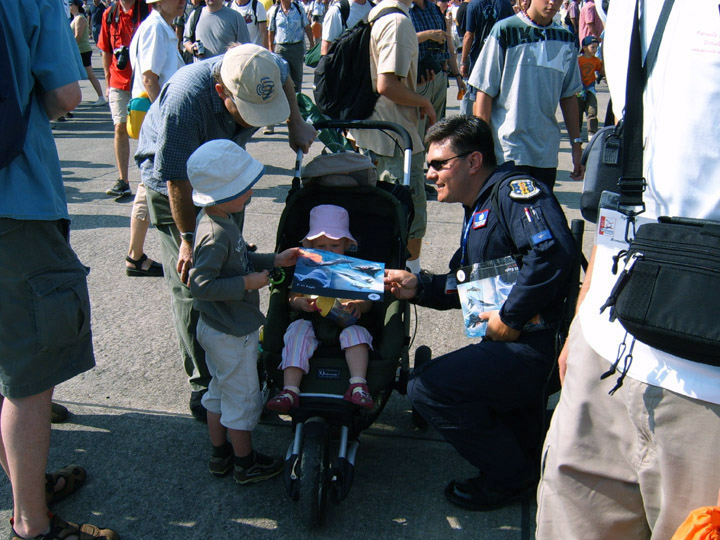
American Eagle flies in Swiss sky

PAYERNE AIR BASE, Switzerland -- Tech. Sgt. Michael Camp hands an F-15 Eagle product card to a child Sept. 4 at the Air 04 air show here. The F-15 West Coast Demonstration Team, from the 33rd Fighter Wing at Eglin Air Force Base, Fla., performed Sept. 4 and 5 for nearly 400,000 people. This is the first air show in Switzerland in more than 12 years.